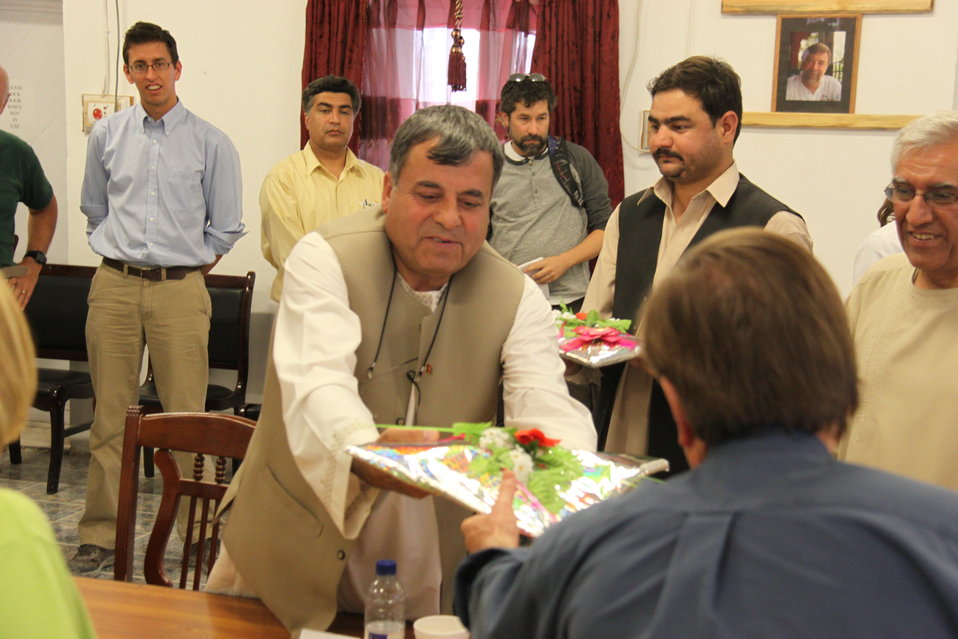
Meeting with Local Leaders in Kandahar